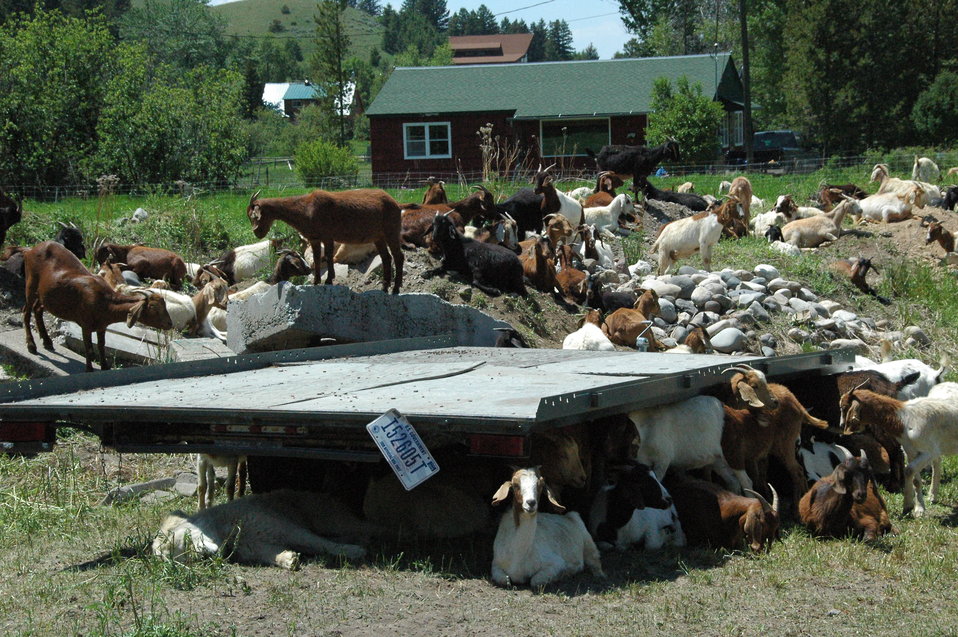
Goat landing on Bozeman Fish Technology Center

On June 8 at 5:00 p.m., 409 yearling domestic goats were off-loaded on the Bozeman Fish Technology Center (BFTC) campus. Thus begins a 3-4 year project of monitored targeted grazing and applications of friendly insects to control noxious weeds and manage brush overgrowth on property of the U.S. Fish and Wildlife Service BFTC.

Purposes of this effort are to reduce the presence of undesirable vegetation, promote restoration of native plants, and assist with fire protection by reducing burnable plant biomass.

The cooperative venture involves the U.S. Fish and Wildlife Service, Montana Outdoor Science School, Friends of the Bozeman Fish Technology Center, Gallatin Valley Land Trust, U.S. Forest Service, and Prescriptive Livestock Services. Integrated Weed Control is supplying the insects as an in-kind contribution to the project, and has applied insects on the BFTC’s 'hot spots' in previous years.